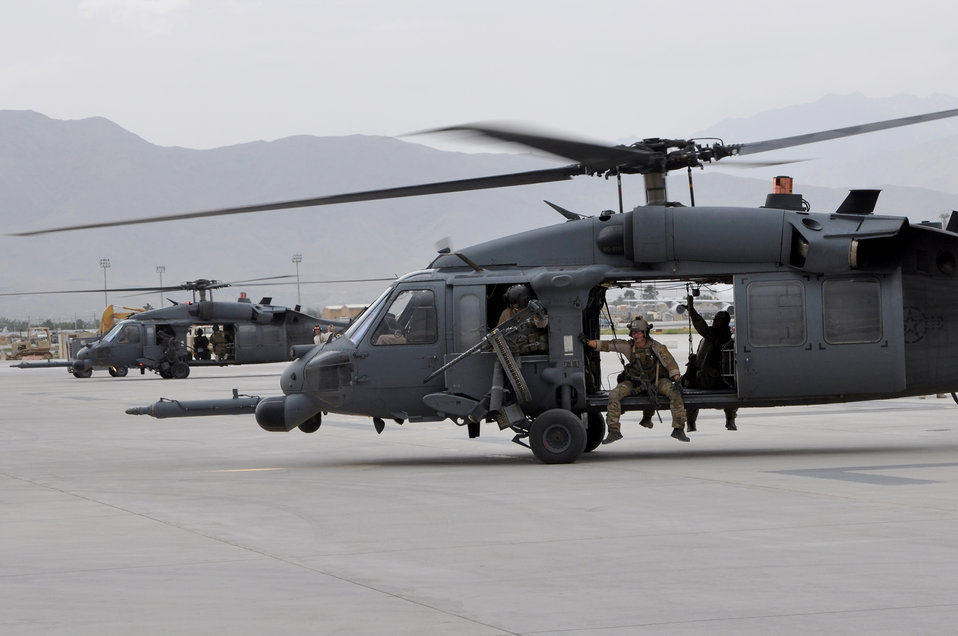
Pave Hawk rescue mission

Members of an HH-60G Pave Hawk crew prepare for takeoff June 11, 2011, at Bagram Airfield, Afghanistan.